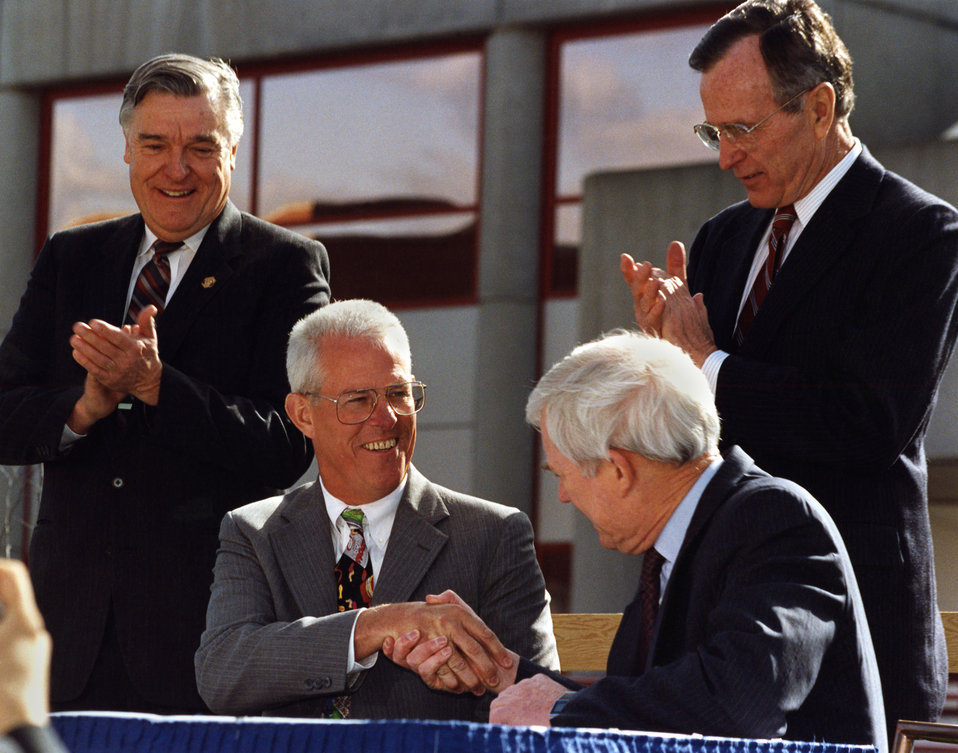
Admiral James Watkins Secretary of Energy, Joe Coors (President and Chairman of Coors Ceramics), Al Trivelpiece (Dir. of Oak Ridge National Lab.) and President George Bush Sr

YP1992-1 DOE photo by Lynn Freeny

Admiral James Watkins Secretary of Energy, Joe Coors (President and Chairman of Coors Ceramics), Al Trivelpiece (Dir. of Oak Ridge National Lab.) and President George Bush Sr. at a signing of agreement between ORNL and Coors Ceramics. Oak Ridge Tennessee 2-19-1992